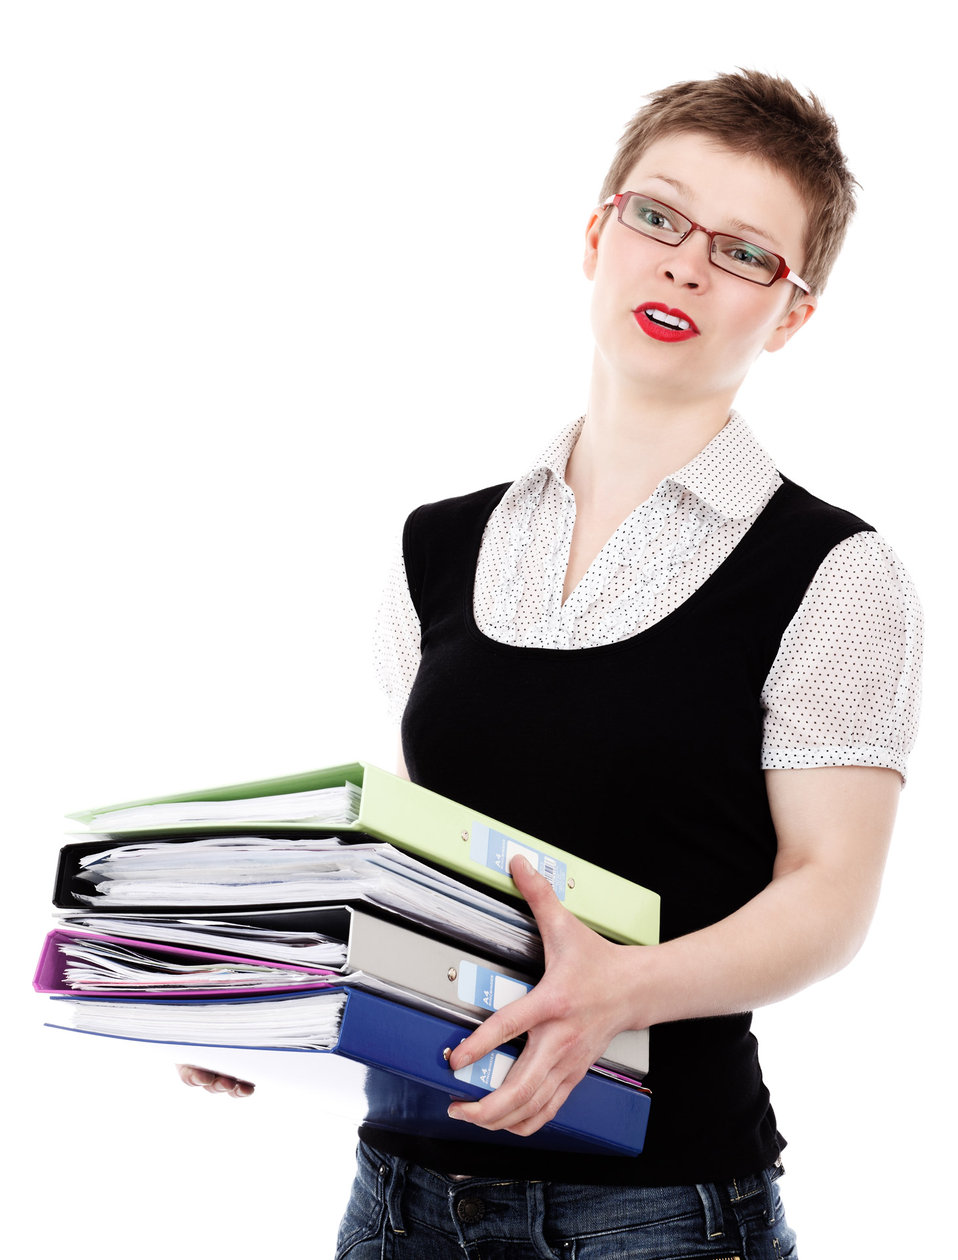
Unhappy office worker

Young woman unhappy with workload isolated on white background - jana svojsova.